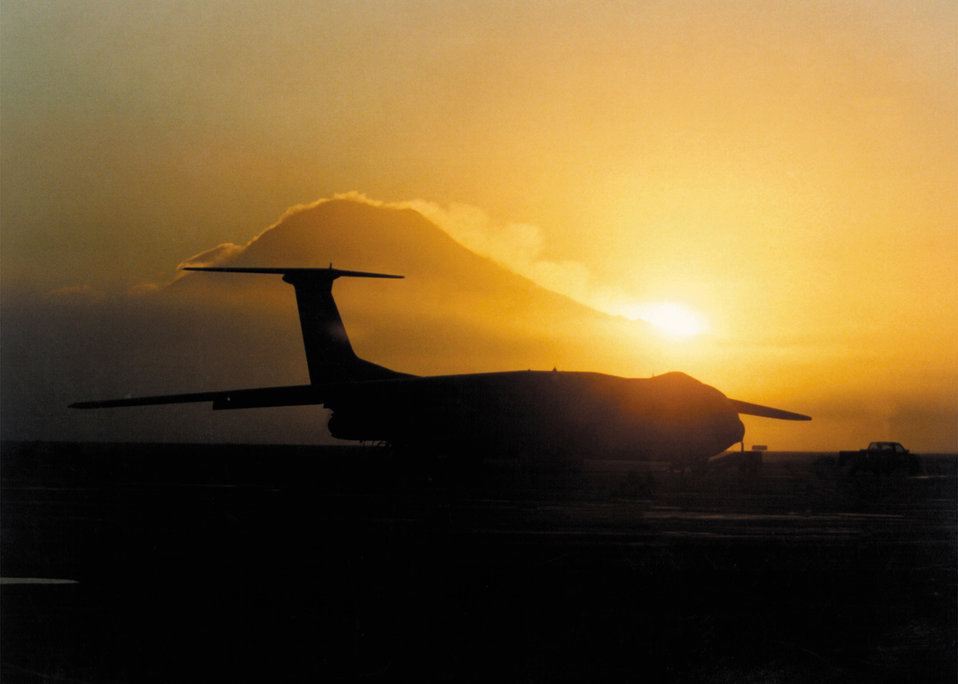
Farewell, old friend

MCCHORD AIR FORCE BASE, Wash. -- A C-141 is silhouetted against Mount Rainier. The 8th Airlift Squadron flew Starlifters from here for 35 years before transitioning to C-17 Globemaster IIIs.